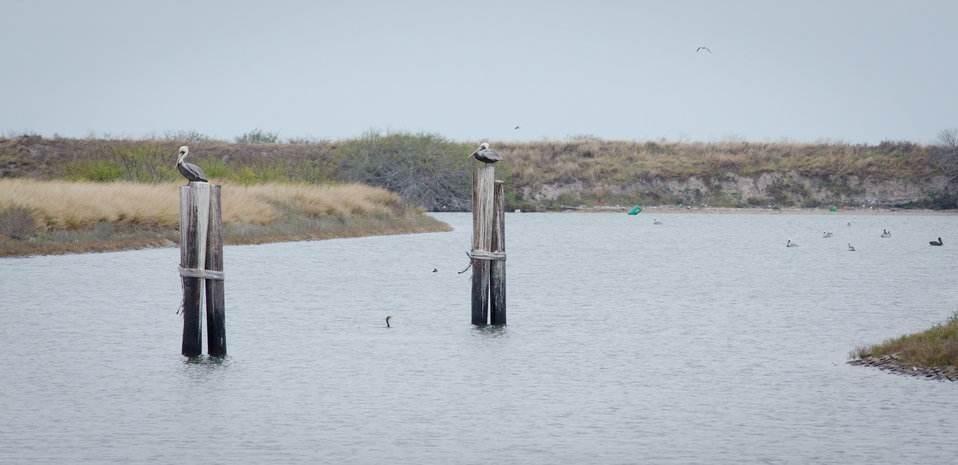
Pelicans rest on pilings looking for fish near the surface of San Antonio Bay (below), at the Aransas National Wildlife Refuge in Austwell, TX, on Friday, December 16, 2011. Typical of a coastal prairie shoreline, Phragmites reed grass stabilizes the shore.
State Conservationist Salvador Salinas commented on the USDA-NRCS Gulf of Mexico Initiative (GoMI) during a press conference, about improving water quality, habitat, and the health of the Gulf ecosystem. “Launching this initiative is a top priority for NRCS in Texas because the Gulf of Mexico is one of our state’s premier natural resources. It provides vital habitat for wildlife, and creates jobs in industries that depend upon them. The health of this resource is essential to Texas as well as to the nation,” said Salvador Salinas. The Texas initiative focuses on three watersheds in Refugio, Calhoun, Victoria and Aransas counties and ultimately the Gulf of Mexico.
“What is really compelling about GoMI and other similar conservation efforts is that they prove that Texas farmers and ranchers not only feed and clothe us and power our vehicles, but they can also help protect and restore our rivers and provide more habitat for wildlife,” stated Salinas. “That’s why it is important that this conservation project is not about taking productive farm land out of production. This is a working lands initiative, so that not only are we helping to restore the health of the Gulf, but we’re also helping to sustain and enhance the productivity of the Gulf’s farms and ranches.”
Nationally, USDA-NRCS is dedicating up to $50 million over three years to this effort.
NRCS will continue to provide proven technical expertise and that of their partners. The anticipated result is improved water quality, stream flows and wildlife habitat.